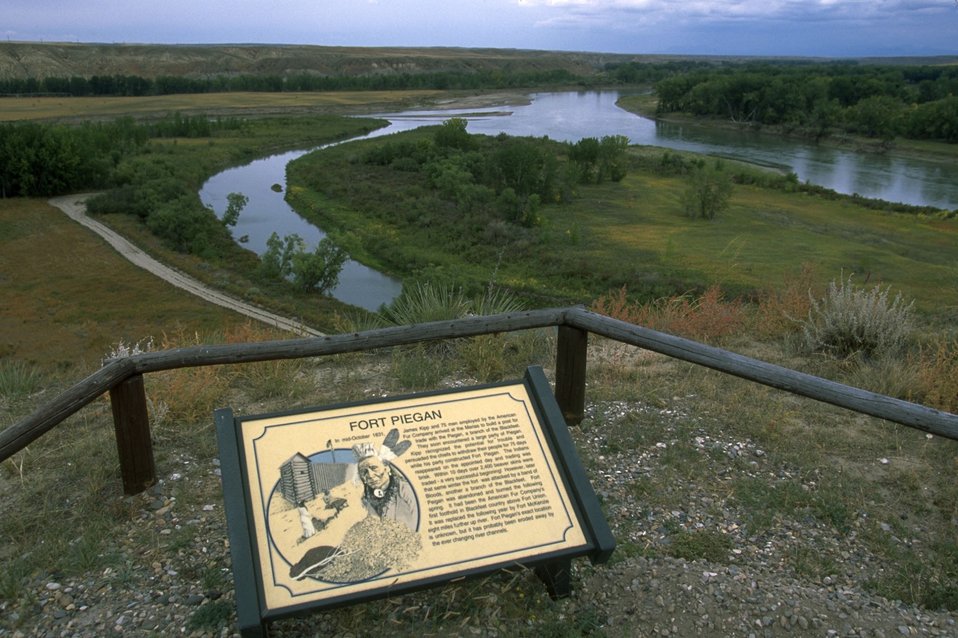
Interpretive sign at Fort Piegan along the Upper Missouri River